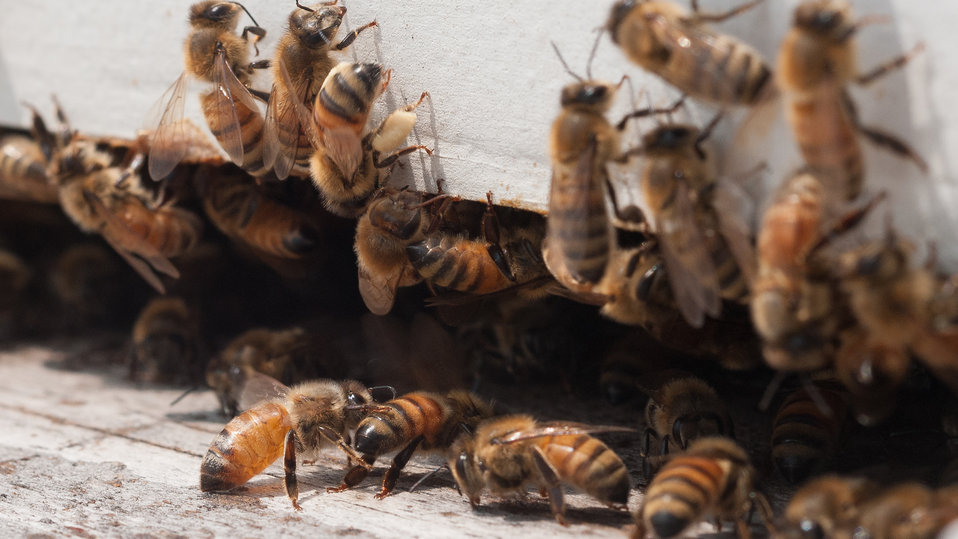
Honey bee with 'saddlebags' of pollen attached to thier hind legs return to the U.S. Department of Agriculture People's Garden apiary, atop the headquarters' Whitten Building in Washington, D.C., on Wednsday, May 22, 2013. The bees gather pollen from plants within about two miles to bring back to the hive for food. The activity of gathering from many flowers before returning moves pollen from plant to plant. Bees provide one of the several types pollination methods.